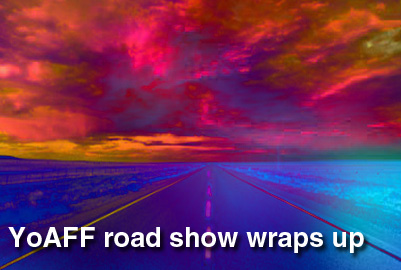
YoAFF road show wraps up

During the Year of the Air Force Family roadshow, Air Force officials had the opportunity to meet hundreds of Airmen and their families and receive their feedback.